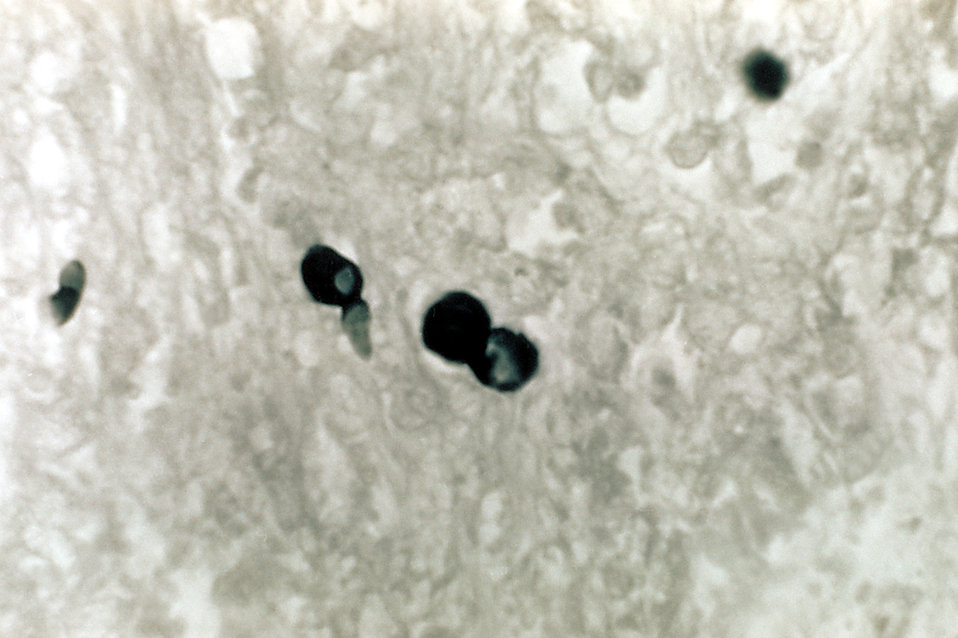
Note the histopathologic changes seen in blastomycosis due to Blastomyces dermatitidis using methenamine silver stain.